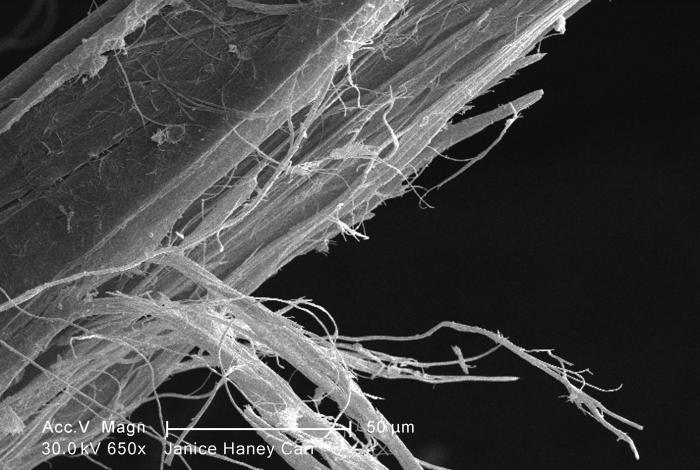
Under a moderate magnification of 650X, this scanning electron micrograph (SEM) revealed some of the microcrystalline ultrastructure exhibited by a piece of raw chrysotile, or white asbestos, which had been excavated from the Lowell Asbestos Mine on Belvidere Mountain, Vermont.